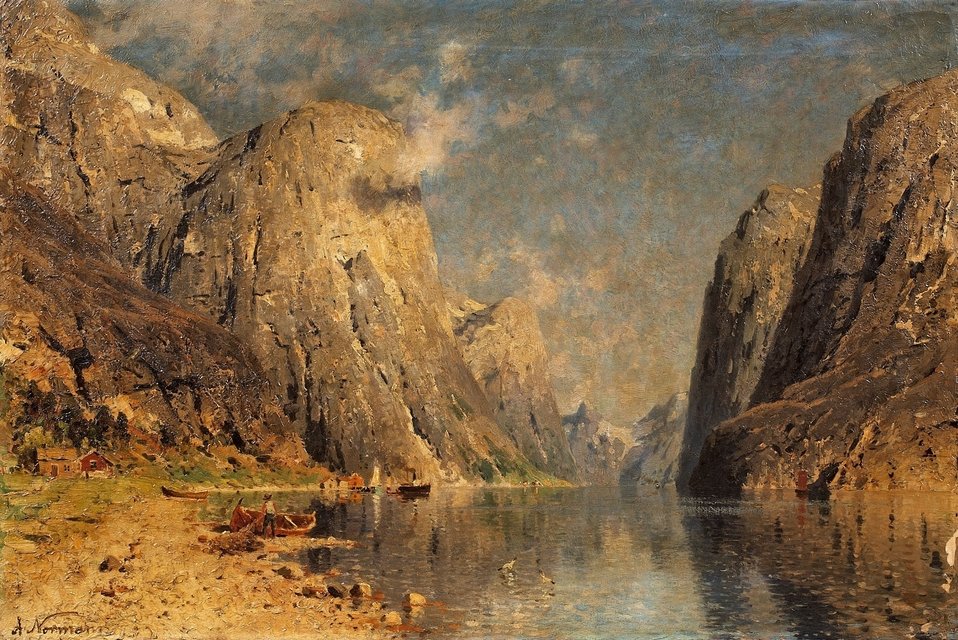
Adelsteen Normann Sognefjord